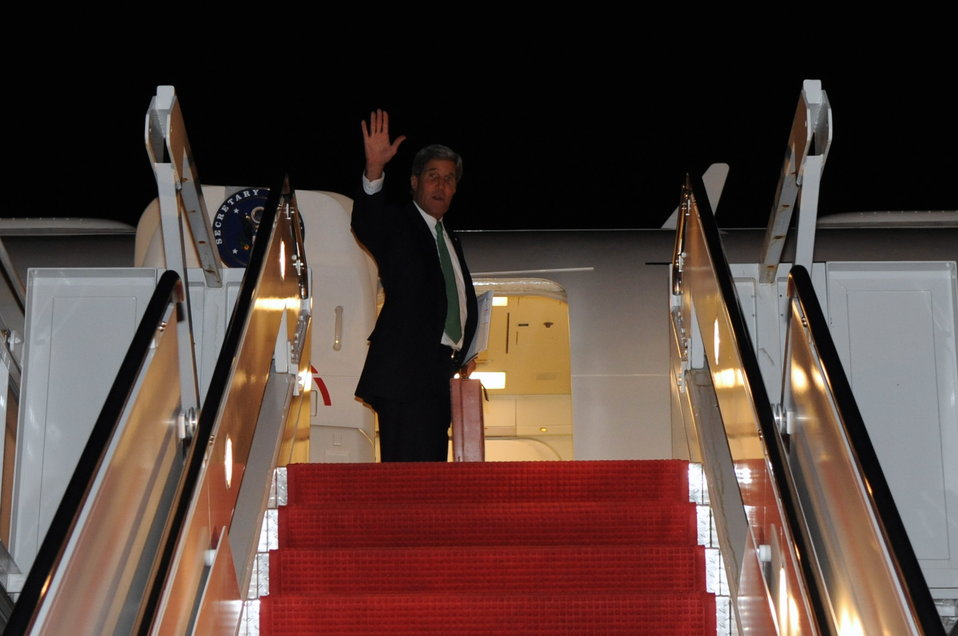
Secretary Kerry Departs On European Trip

U.S. Secretary of State John Kerry waves goodbye at Andrews Air Force Base before a flight to Paris and the beginning of a trip to Europe, on October 20, 2013.